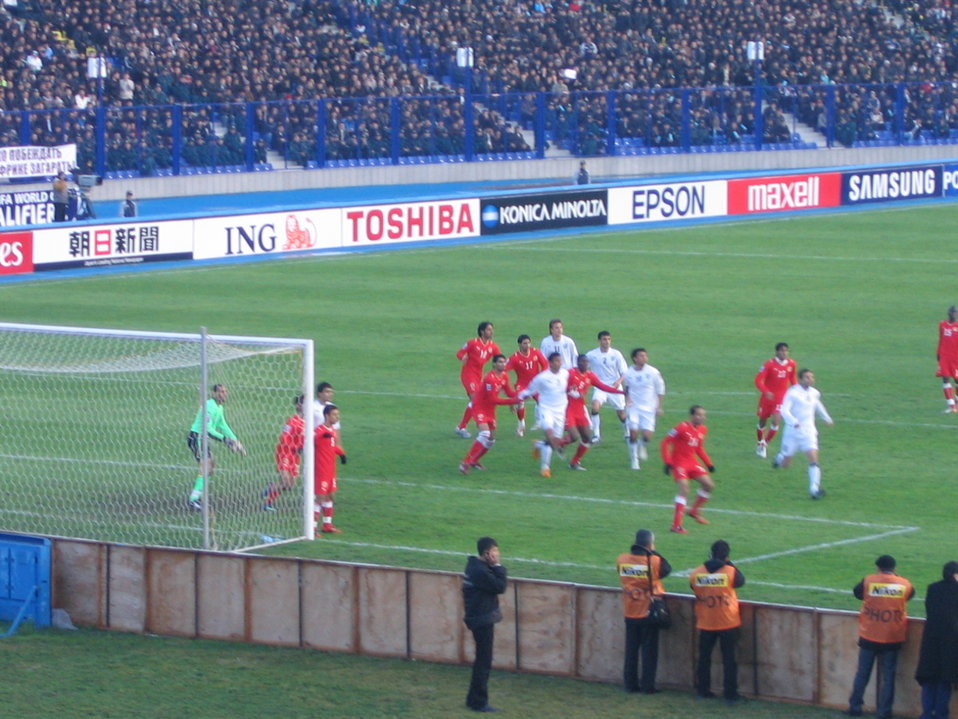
Soccer players waiting for a corner kick during qualification match for the 2010 Soccer World Cup (Asian zone)†: Uzbekistan- Bahrain (0-1), at Pakhtakor Stadium, in Tashkent (Uzbekistan). Uzbekistan is in white, Bahrain is in red. Fran√ßais†: Joueurs de football attendant un coup de pied de coin (corner) durant un match de qualification pour la Coupe du monde de football 2010 (zone Asie)†: Ouzb√©kistan-Bahrein (0-1), au Stade Pakhtakor, √† Tachkent (Ouzb√©kistan). L'Ouzb√©kistan est en blanc, le Bahrein en rouge.